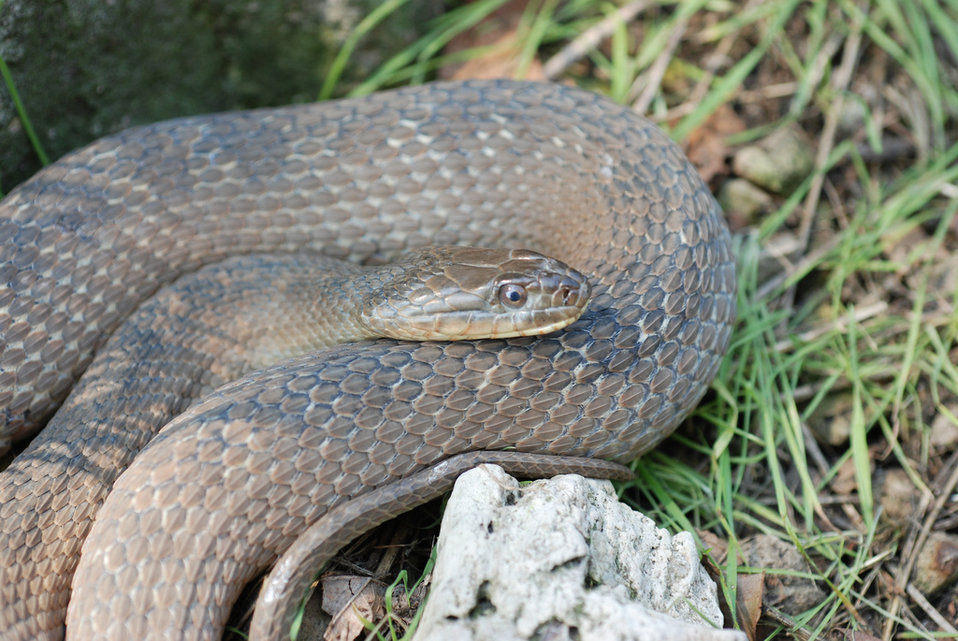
Recovered Lake Erie watersnake (Nerodia sipedon insularum)